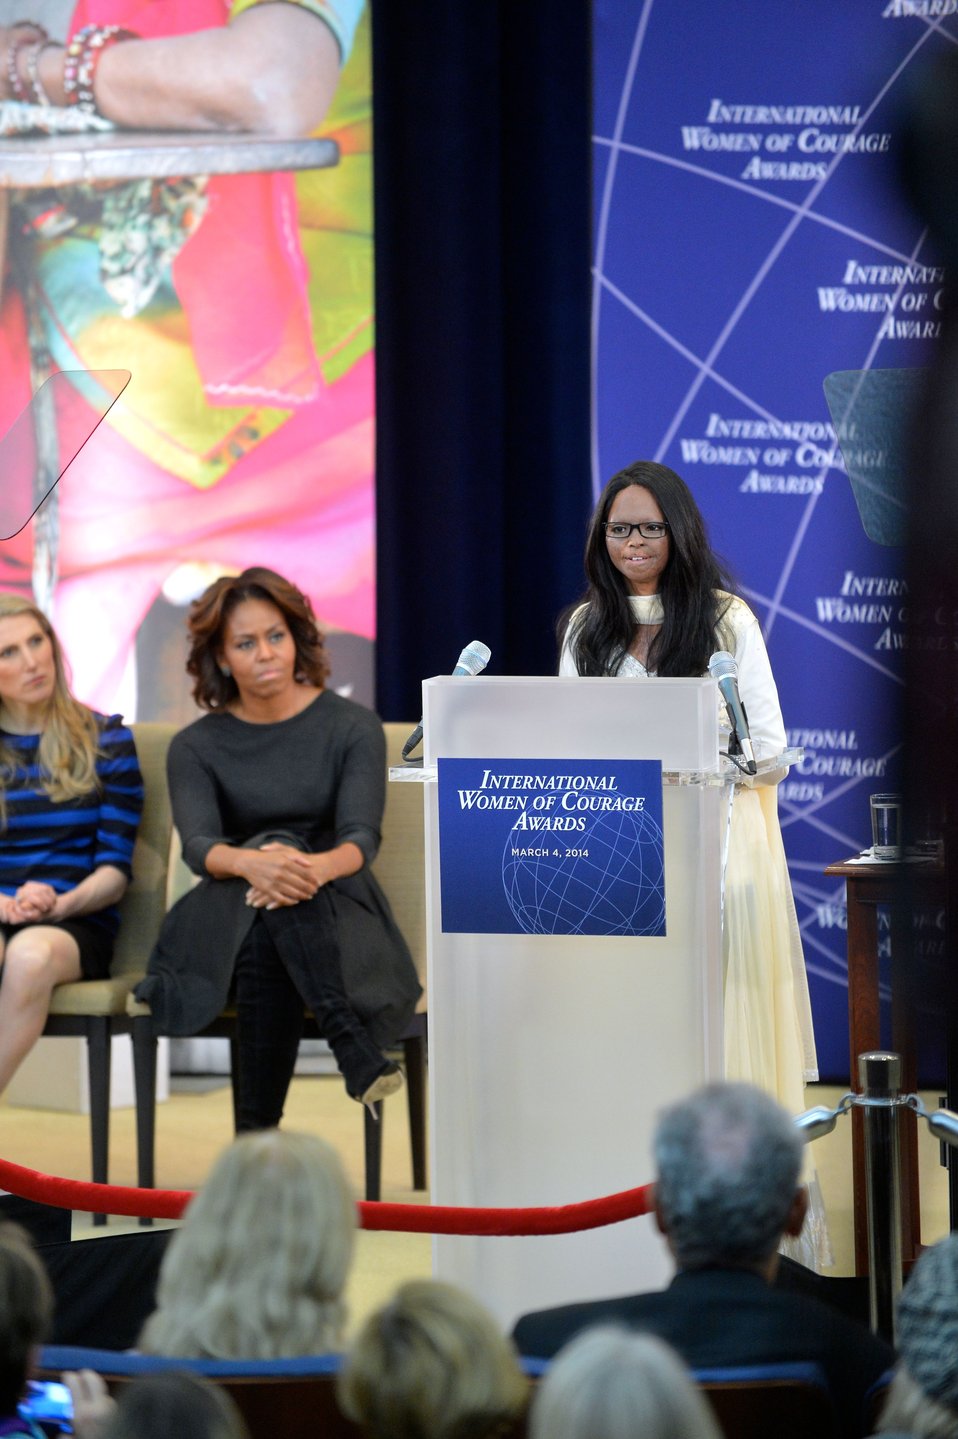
2014 IWOC Awardee Laxmi Delivers Remarks

With First Lady Michelle Obama looking on, 2014 International Women of Courage Awardee Laxmi, a Campaigner for Stop Acid Attacks in India, delivers remarks at the 2014 Secretary of State’s International Women of Courage Award Ceremony at the U.S. Department of State in Washington, D.C., on March 4, 2014.